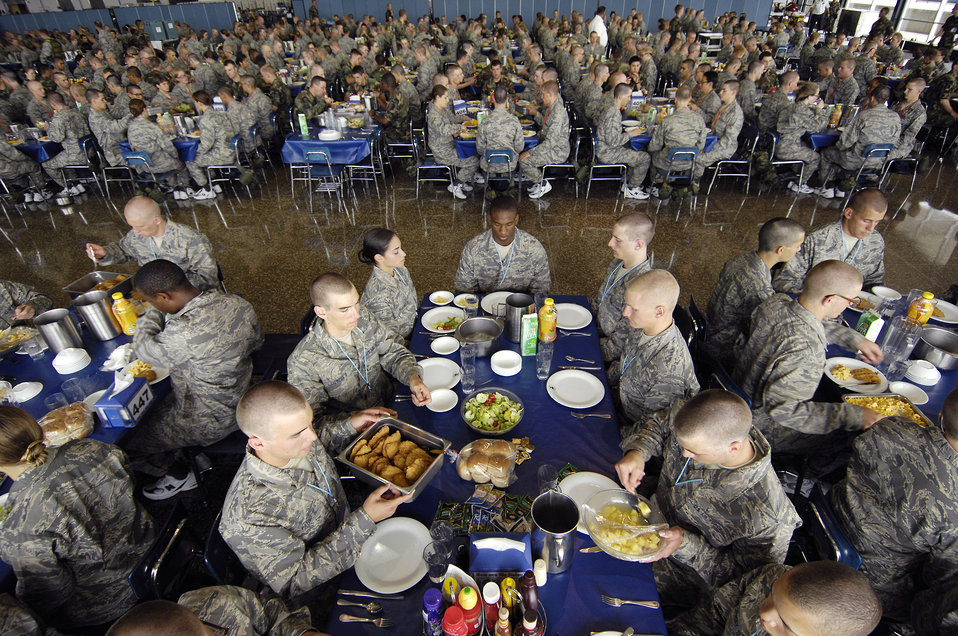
Class of 2012 Arrives

Lunch is served to members of the Class of 2012 in Mitchell Hall on Day Two of the 38 days of Basic Cadet Training June 27 at the U.S. Air Force Academy, Colo. Inprocesing marks the start of 38 days of Basic Cadet Training, which is designed to prepare basic cadet trainees for entry into the cadet wing.